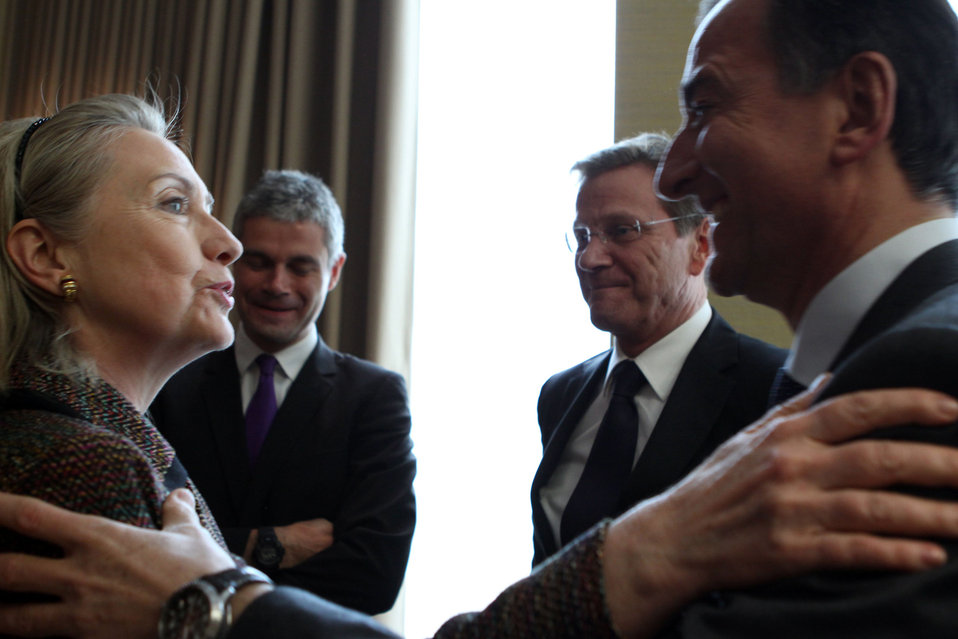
Secretary Clinton Speaks With Italian, German Foreign Ministers Frattini and Westerwelle, and French European Affairs Minister Vauquier

U.S. Secretary of State Hillary Rodham Clinton speaks with (left to right): Italian Foreign Minister Franco Frattini, German Foreign Minister Guido Westerwelle, and French European Affairs Minister Laurent Vauquier at a meeting of the Quint Foreign Ministers at the Hotel Intercontinental in Geneva, Switzerland, on February 28, 2011.